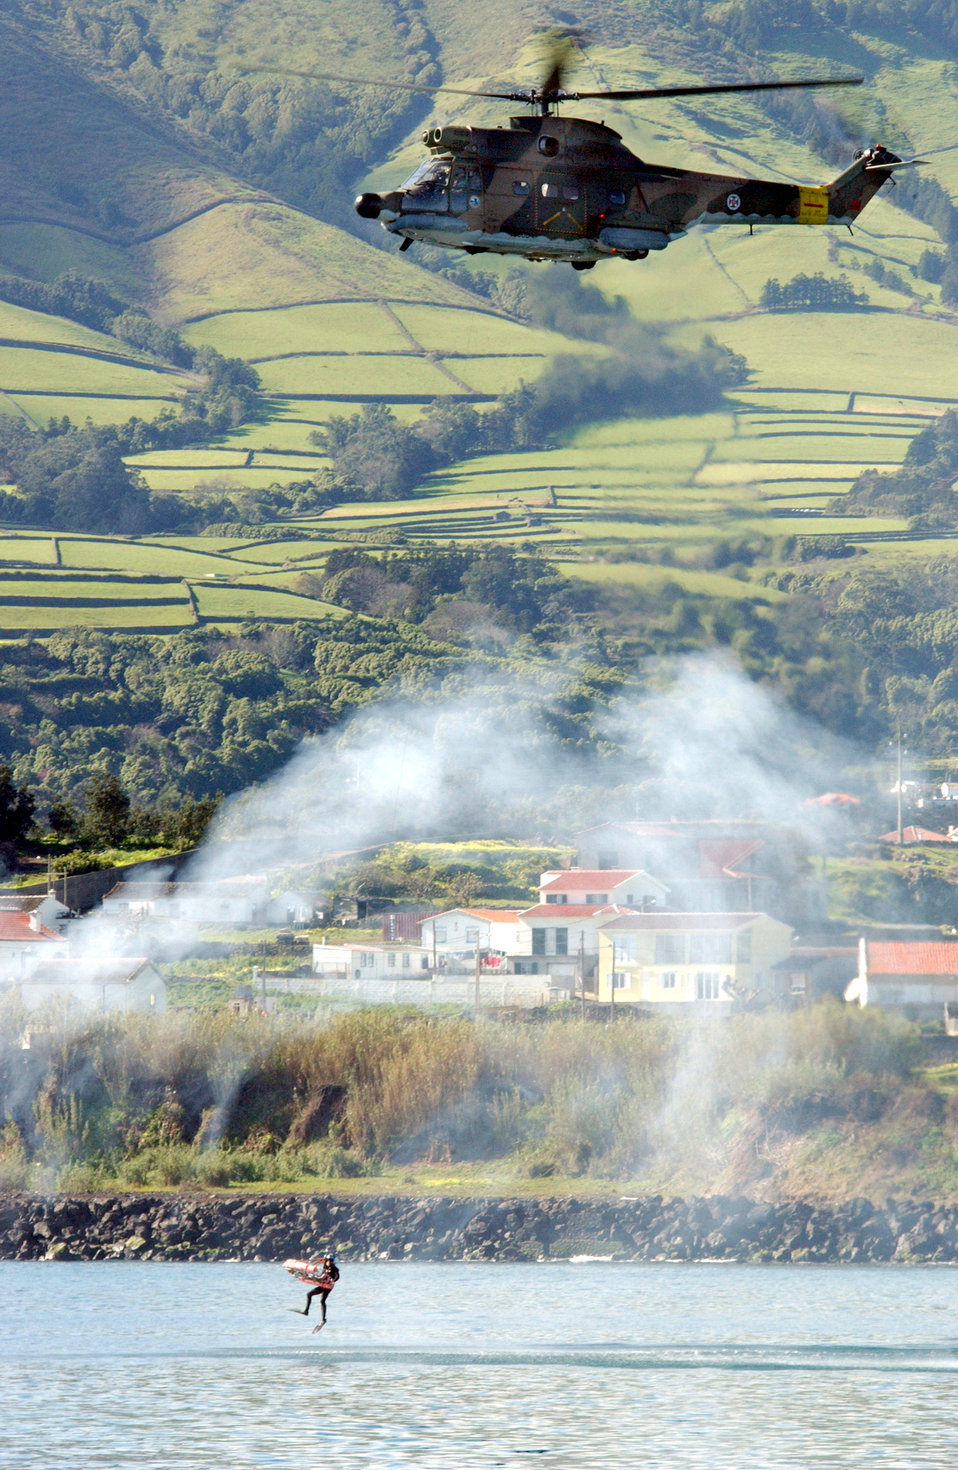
Joint-rescue effort

TERCEIRA, Azores -- Portuguese air force First Sgt. Rui Frade is lowered into Praia Bay from an SA-330 Puma helicopter Feb. 9 during a rescue exercise. The exercise joined more than 200 Portuguese and American forces testing the capability to provide rescue service during a simulated space shuttle emergency. The joint team performs the exercise each year. Sergeant Frade is a pararescueman with the 711th Squadron at Lajes Field.